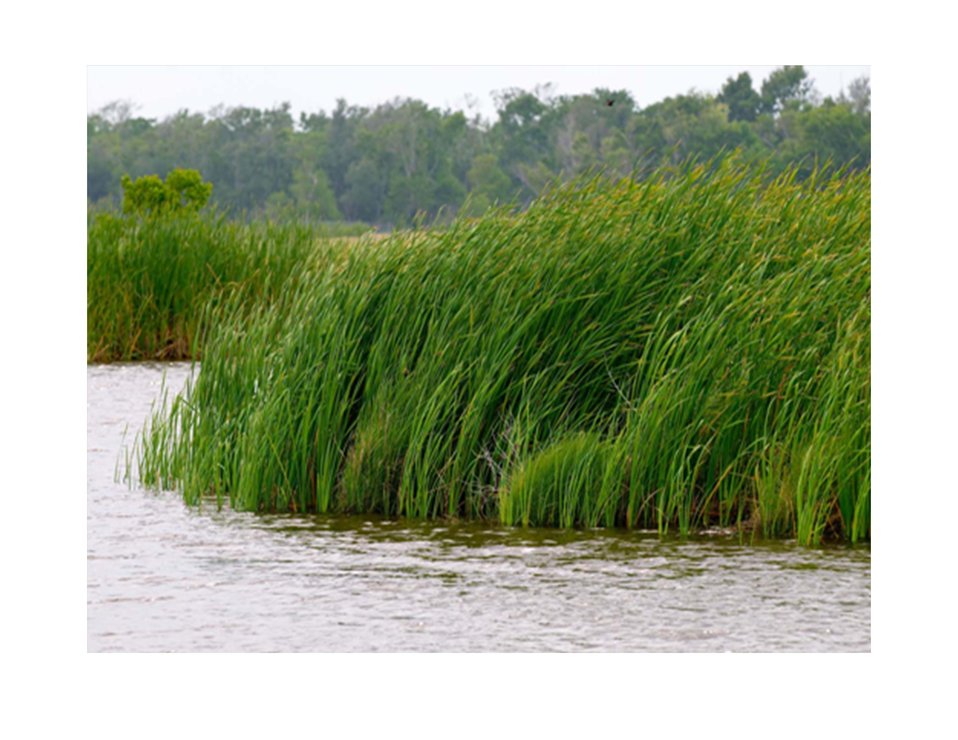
Marsh grass in the breeze, Louisiana